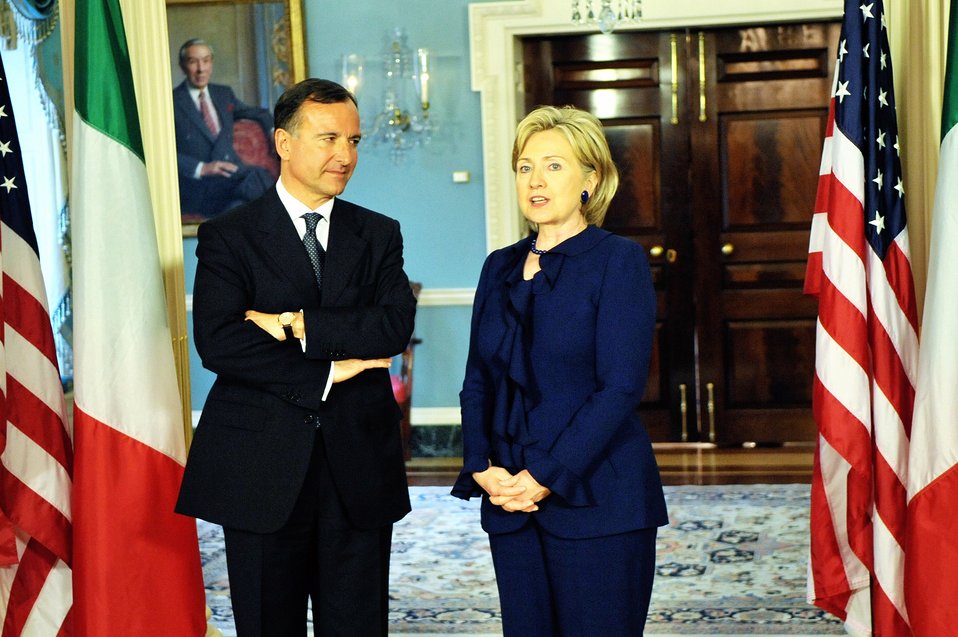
Secretary Clinton Meets With Italian Foreign Minister

U.S. Secretary of State Hillary Rodham Clinton hosts a bilateral meeting with Italian Foreign Minister Franco Frattini in the Treaty Room of the U.S. Department of State in Washington, DC May 7, 2009.